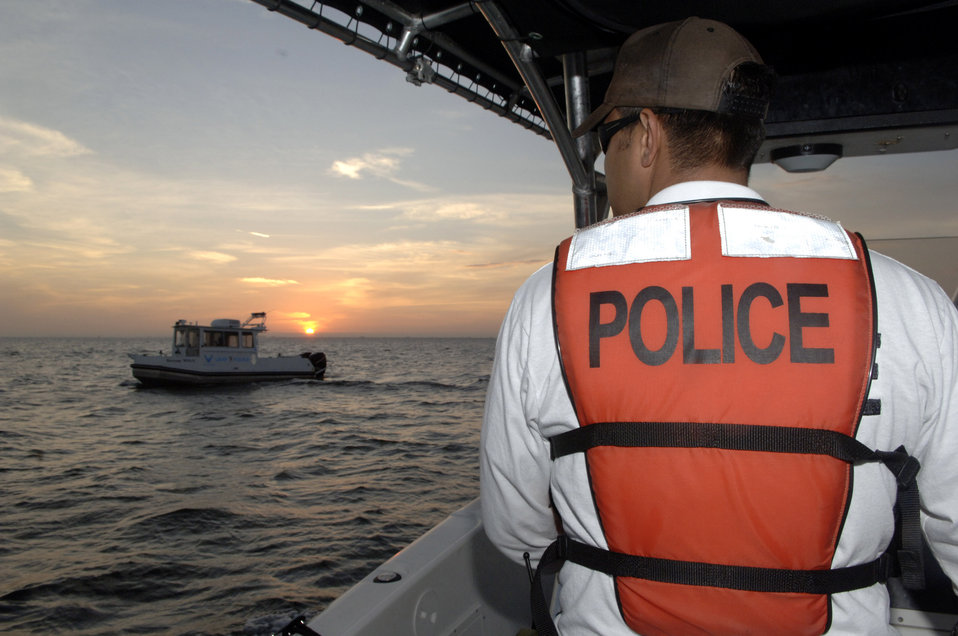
Bay watch

Staff Sgt. Randall Resto polices Tampa Bay Nov. 27 near MacDill Air Force Base, Fla. Sergeant Resto is a member of the 6th Security Forces Squadron boat patrol, one of the units in the Air Force to have a boat patrol and the only one to conduct patrols overnight.